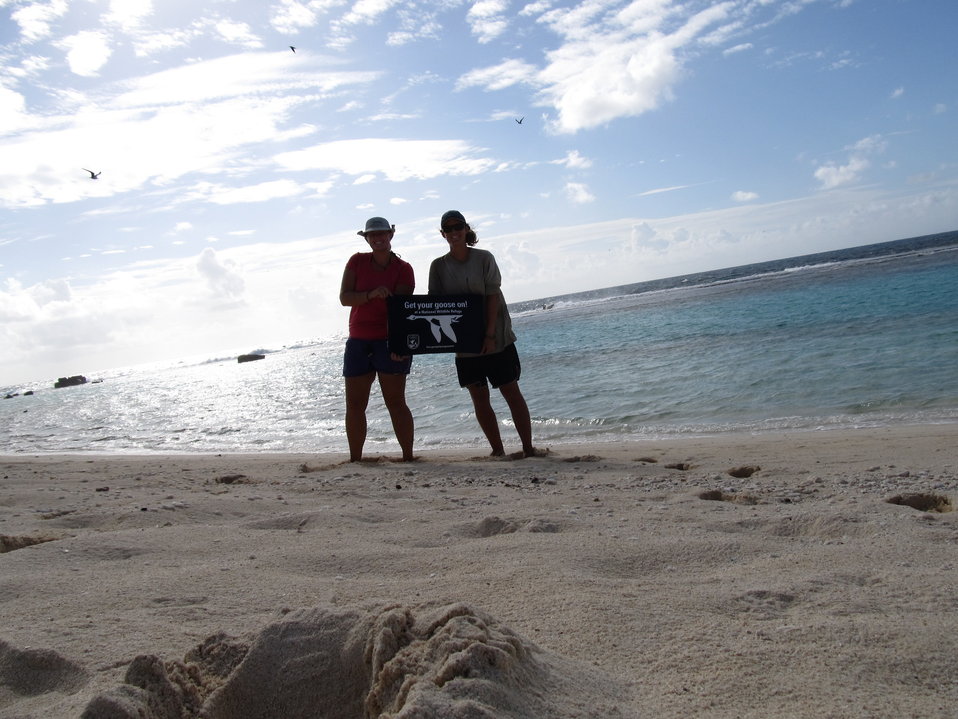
Get Your Goose On! - Laysan Style

Photo taken at Laysan Island in the Papahanaumokuakea Marine National Monument, Hawaiian Islands National Wildlife Refuge. Laysan is located approximately 800 miles northwest of Honolulu, Hawaii and is a remote field camp staffed year round for habitat restoration and population monitoring.